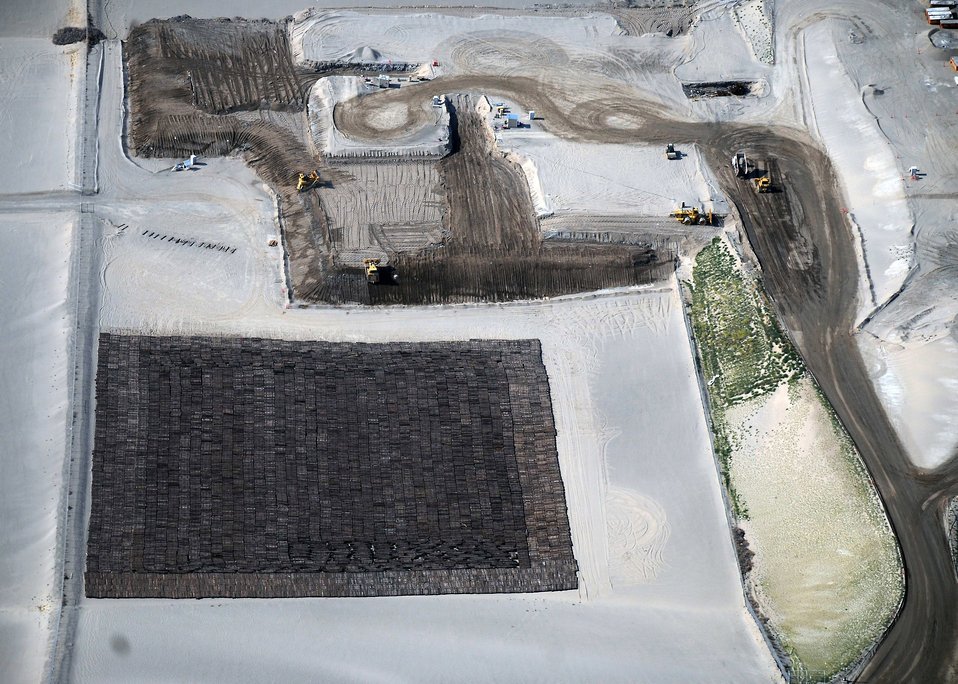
Hanford Completes Recovery Act Project Under Budget, Ahead of Schedule

Washington Closure Hanford disposed 58,500 railroad ties from the Hanford Site at the Environmental Restoration Disposal Facility. The railroad ties were disposed in super cell 9, which was constructed using Recovery Act funds.